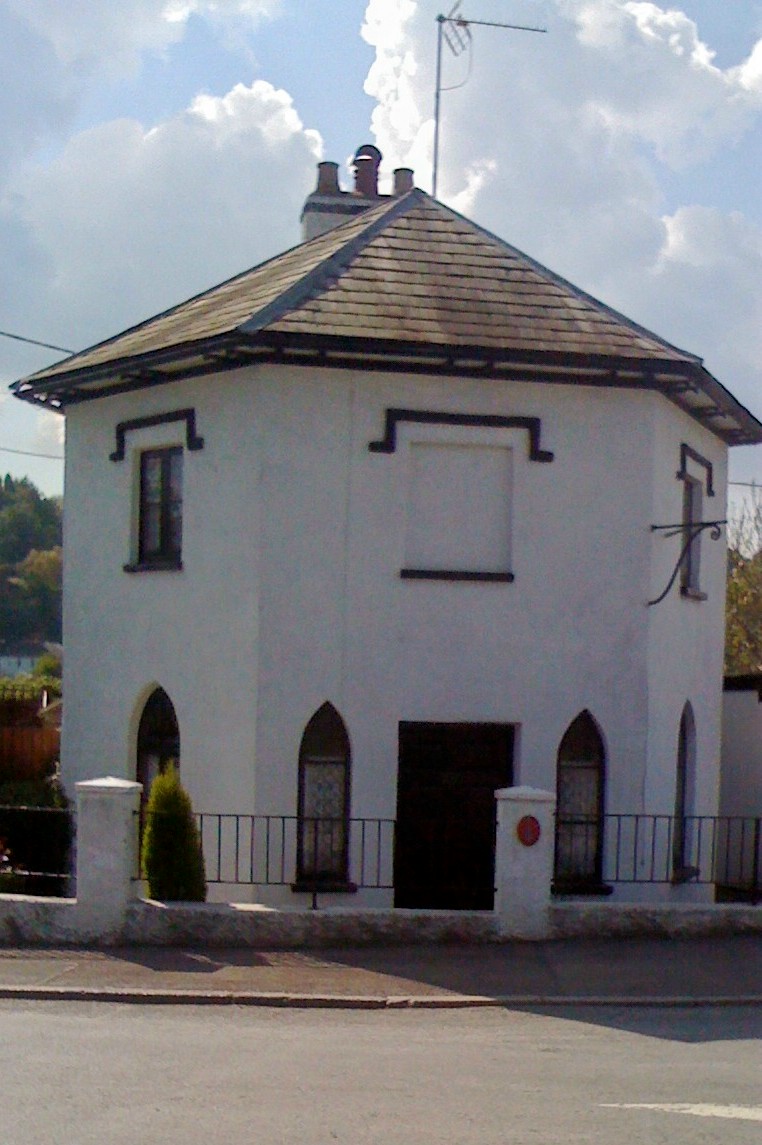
The Toll House, Caerleon Bridge
Category:Pictures of Caerleon